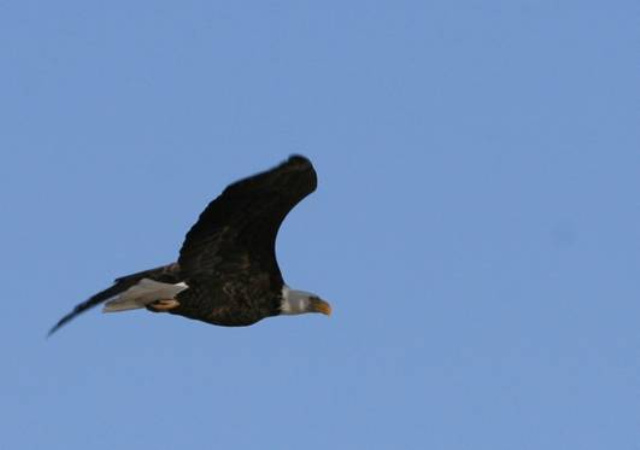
Bald Eagle

The Bald Eagle (Haliaeetus leucocephalus Greek hali = salt, aeetus = eagle, leuco = white, cephalis = head) is a bird of prey found in North America.